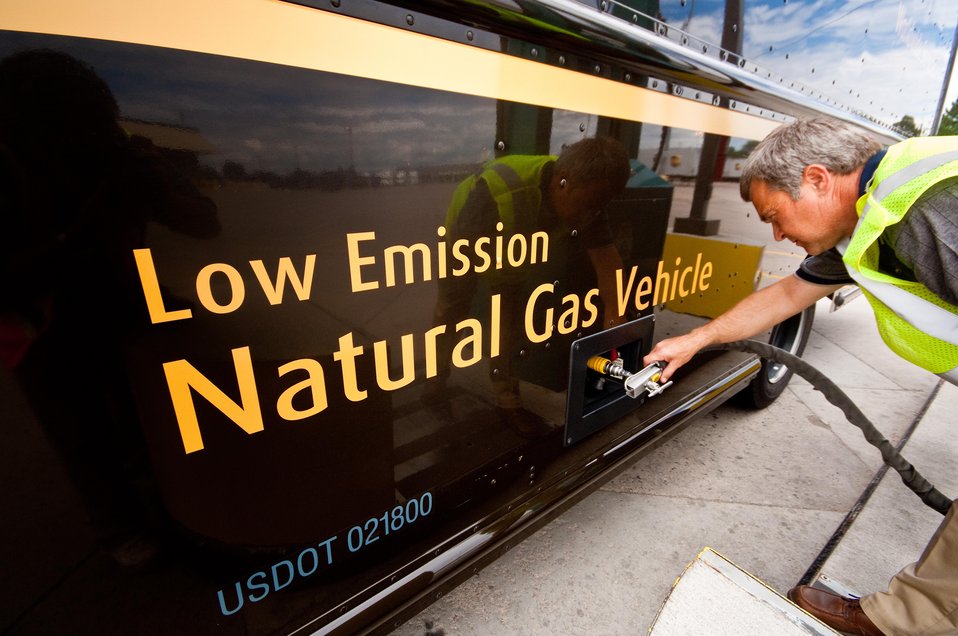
A UPS DELIVERY TRUCK FUELS UP WITH COMPRESSED NATURAL GAS.

President Obama unveiled the National Clean Fleets Partnership, a public-private partnership that will draw on the expertise of the Department of Energy to help large companies reduce diesel and gasoline use in their fleets by incorporating electric vehicles, alternative fuels and fuel-saving measures into their operations. Charter members of this partnership include AT&T, FedEx, Pepsi Co., UPS and Verizon.